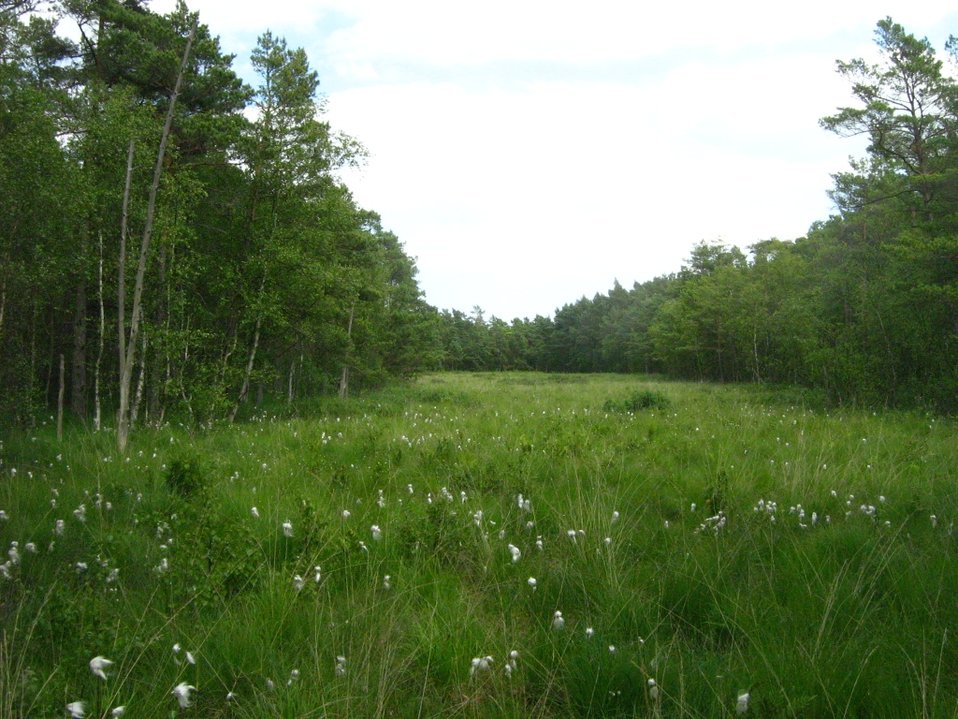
Deutsch: Das D√§nschenburger Moor ist eines der gr√∂√üten Hochmoore Norddeutschlands. Durch Wasserabsenkung ist das Moor inzwischen fast vollst√§ndig mit Kiefern und Birken bewaldet. Der baumlose Streifen auf dem Foto ist die freigehaltene Schu√üschneise eines J√§gers. Das Foto wurde von seiner Kanzel aus gemacht.
(NSG ‚ÄûGro√ües Moor bei D√§nschenburg‚Äú N21, 71 ha, Gemeindegebiet der Stadt Marlow, Landkreis Nordvorpommern, Mecklenburg) Camera location 54¬∞†07‚Ä≤†42.54‚Ä≥†N, 12¬∞†26‚Ä≤†26.34‚Ä≥†E View this and other nearby images on: OpenStreetMap - Google Maps - Google Earth 54.128483; 12.440650